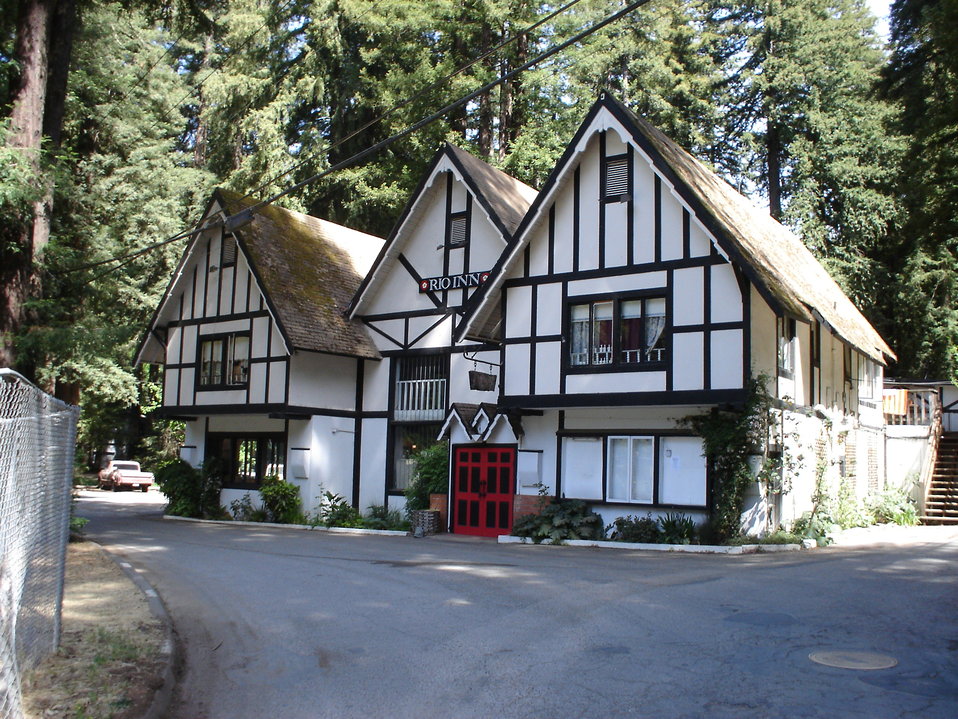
Rio Inn Author:Robert E. Nylund Source:Personal Photos